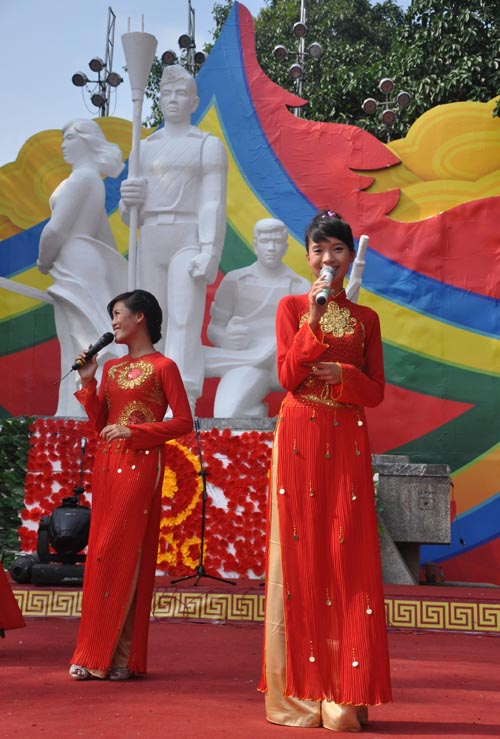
Hanoi celebrates 1,000 years as capital of Vietnam.